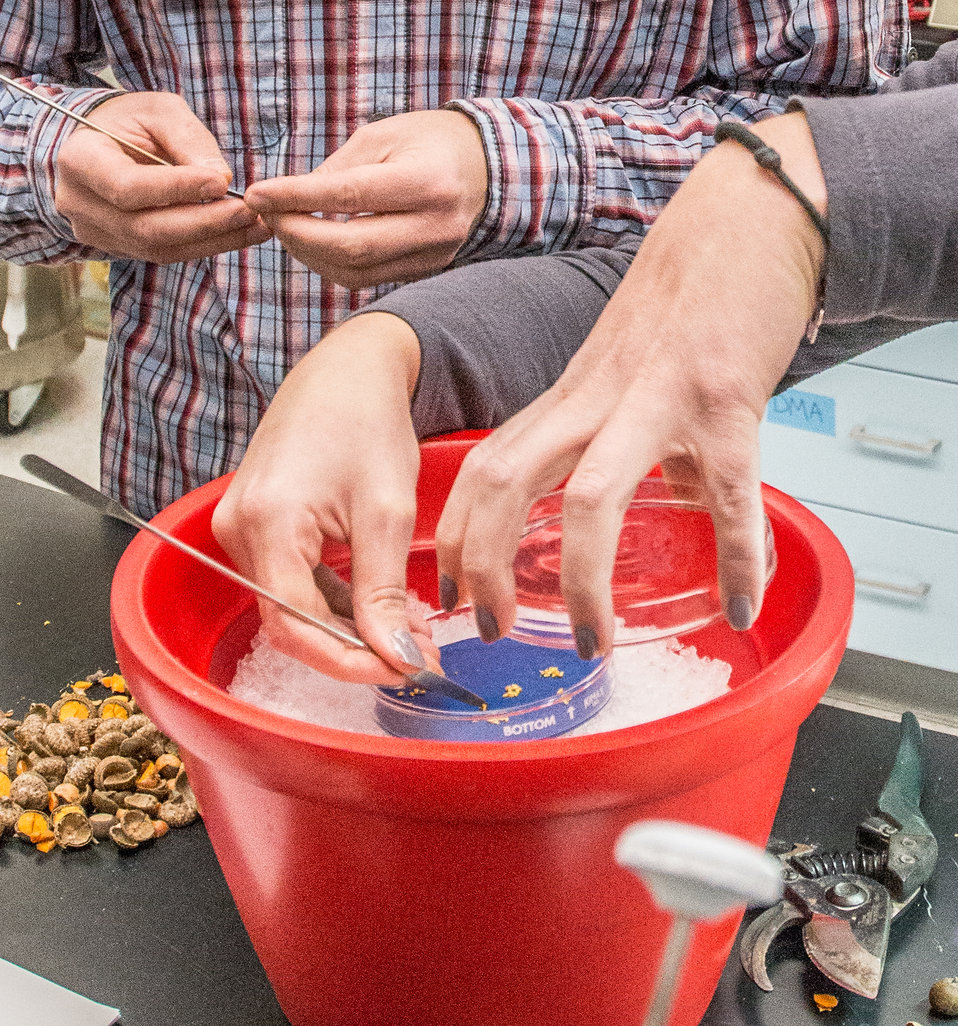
Extracted acorn seed embryos are carefully placed in a petri dish, during research conducted at the U.S. Department of Agriculture (USDA), Agriculture Research Service (ARS), National Center for Genetic Resources Preservation (NCGRP) Plant Germplasm Preservation Research Unit (PGPRU), in Ft. Collins, CO, on Wednesday, Nov. 6, 2013.